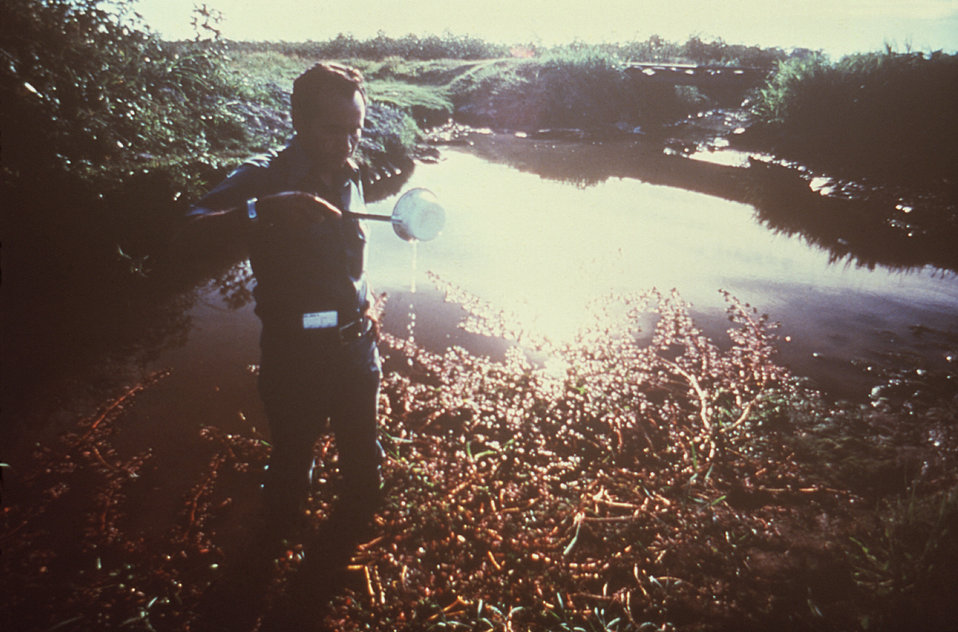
This 1977 photograph, captured in El Salvador, depicted an entomologic field technician who was in the process of using a dipper while analyzing the water of a shallow pond for the presence of possible arboviral vector larvae.